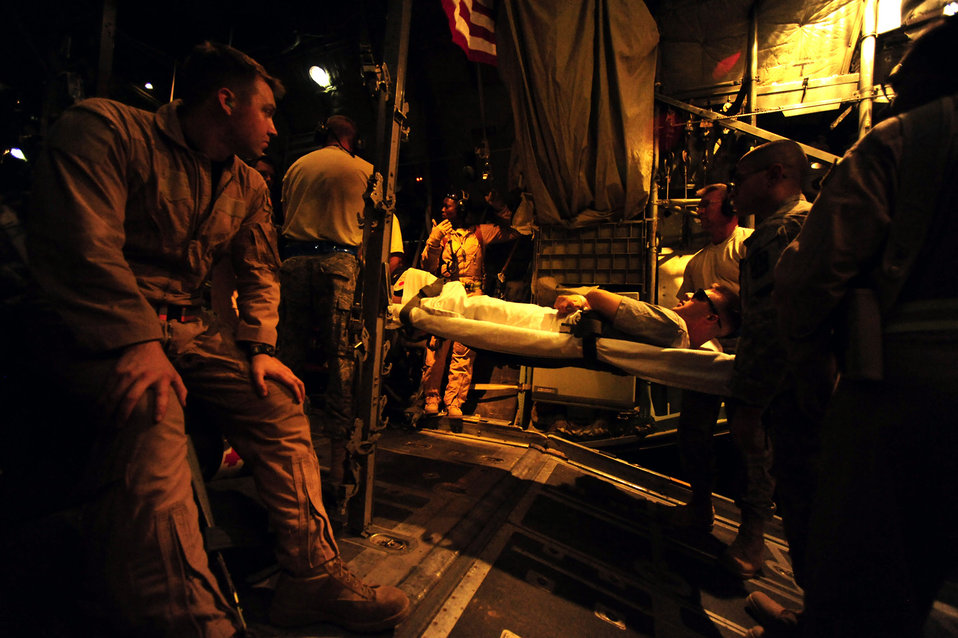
Medical crew

Reservists assigned to the 362nd Expeditionary Aeromedical Evacuation Flight carry on a litter patient for transport aboard a C-130 Hercules aircraft during an aeromedical mission July 17, 2010, at Tikrit, Iraq.